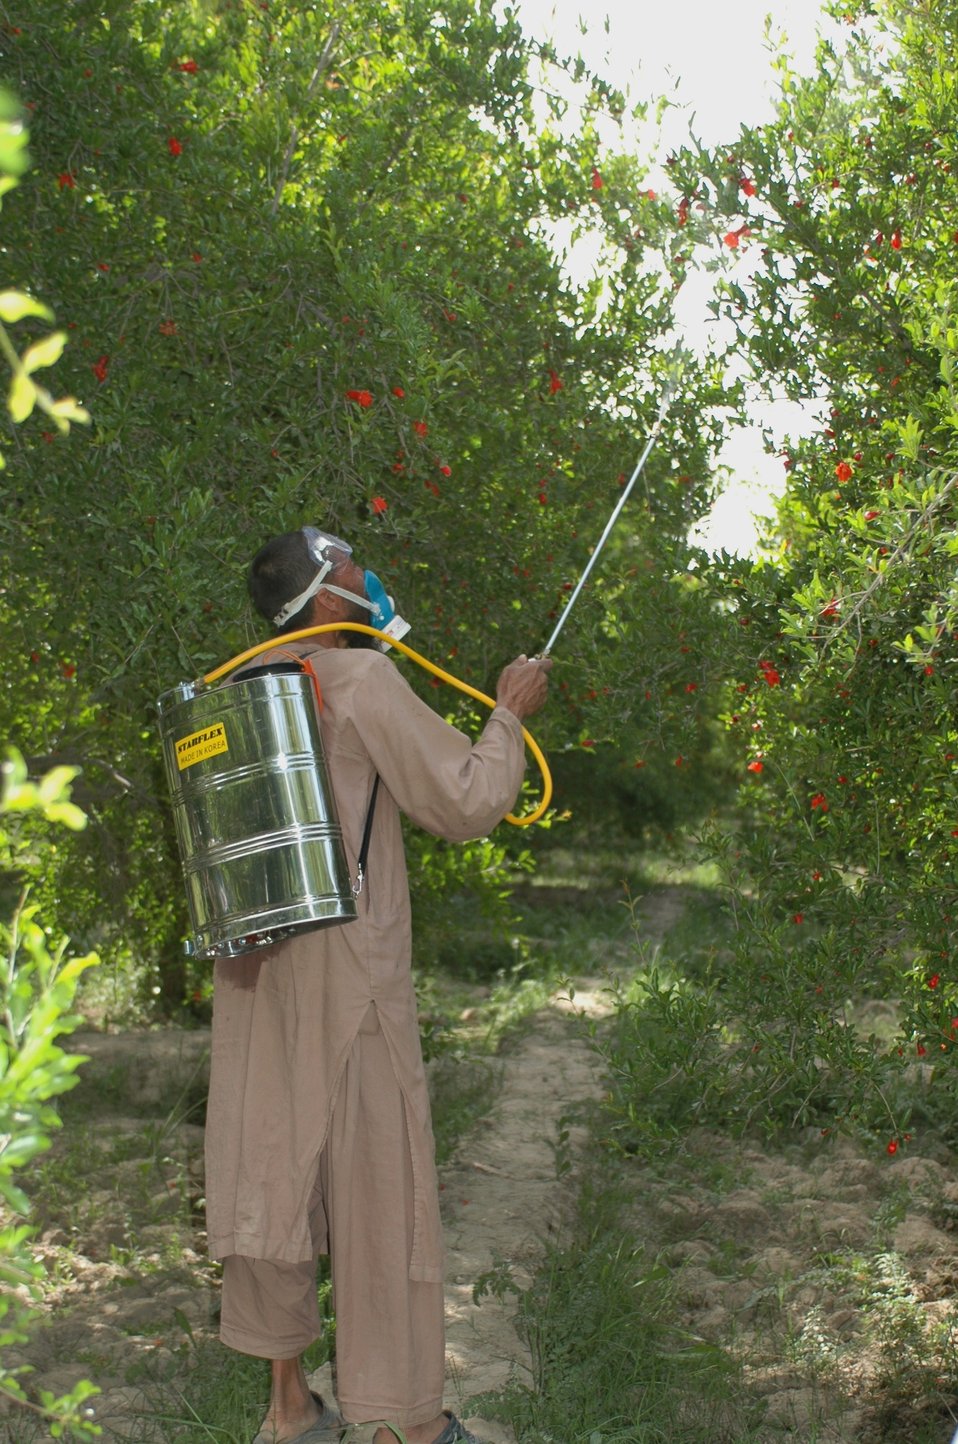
Dr Shah Visits Argandab April 10, 2010